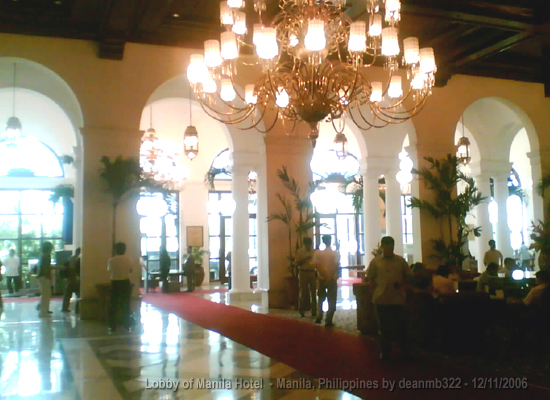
This image was copied from wikipedia:en. The original description was: The lobby of the Manila Hotel - taken 25 October 2006 by Dean M. Bernardo for public and domain release to Wikipedia.